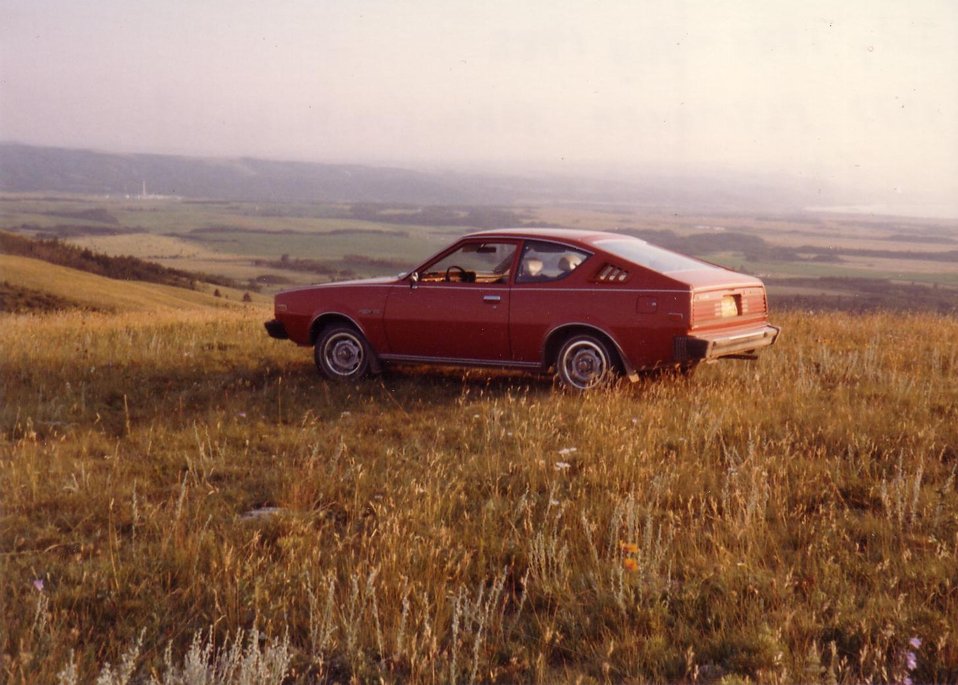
Matthew Enright Menright63 10:58, 12 July 2007 (UTC) 1977 Plymouth Arrow, 2.0 Litre, Purchased in Calgary, AB in 1981 by Matthew Enright. Photograph taken west of Cochrane, AB in 1981.